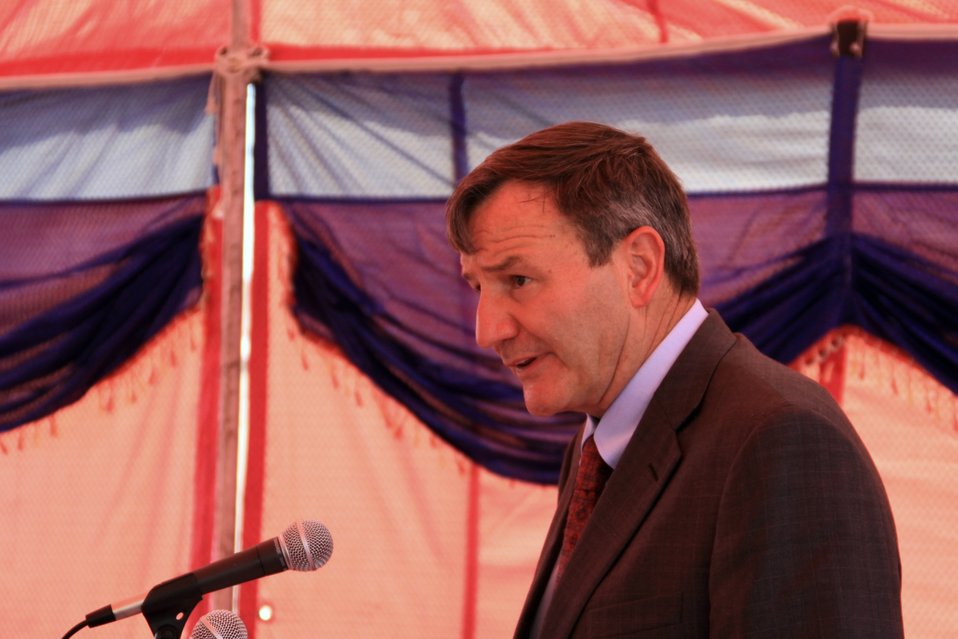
Badam Bagh Farm